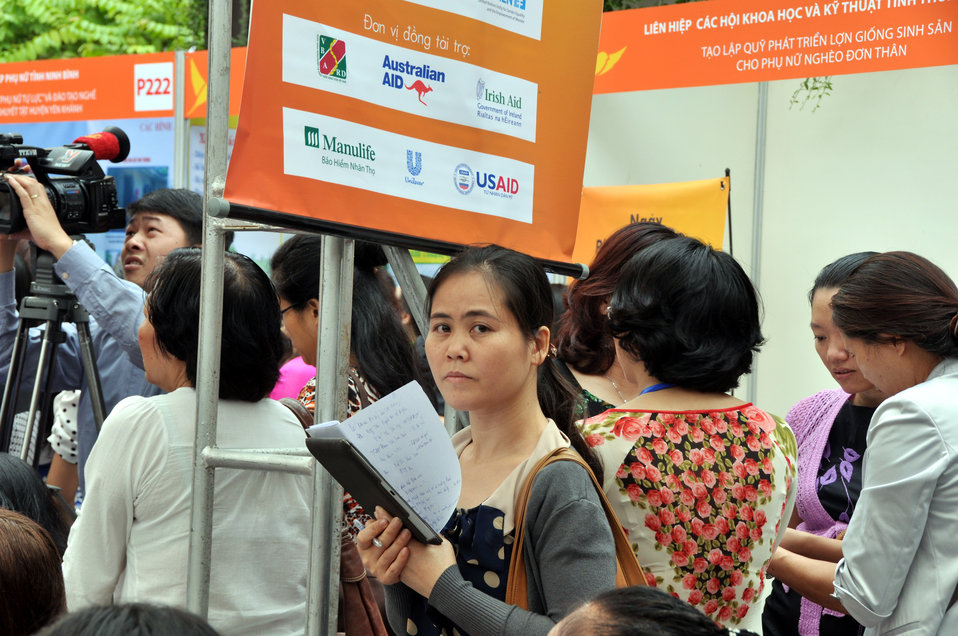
Vietnam Women Innovation Day 2013

Hanoi, October 1, 2013.